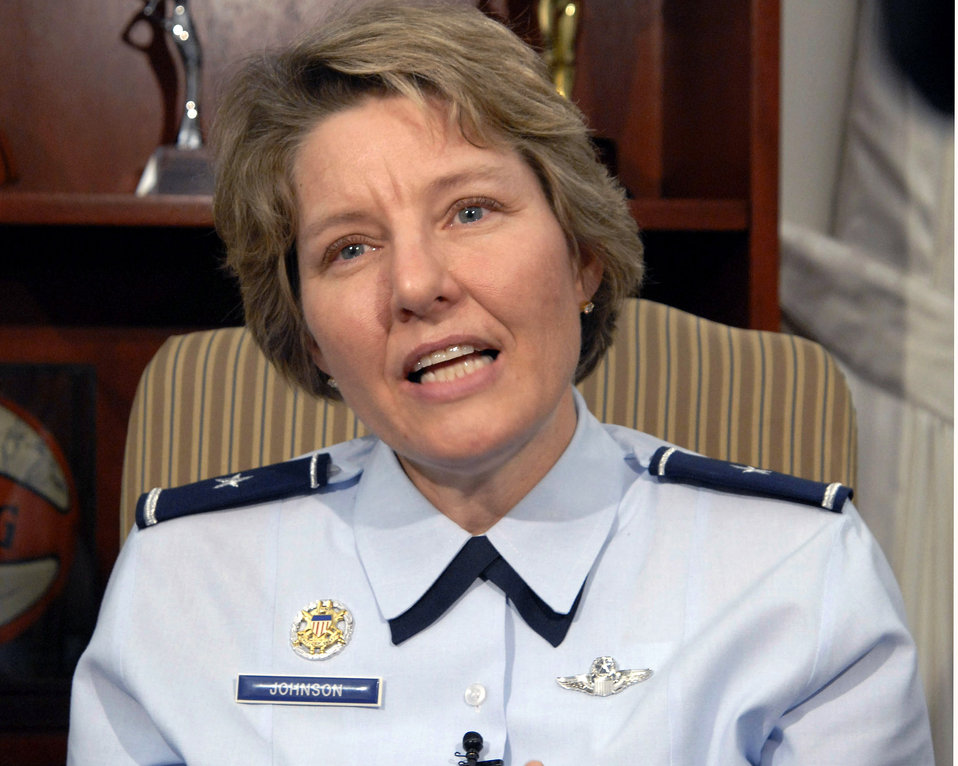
National sports program features female general

Brig. Gen. Michelle D. Johnson comments on being featured in an episode of CBS Sports Spectacular titled,